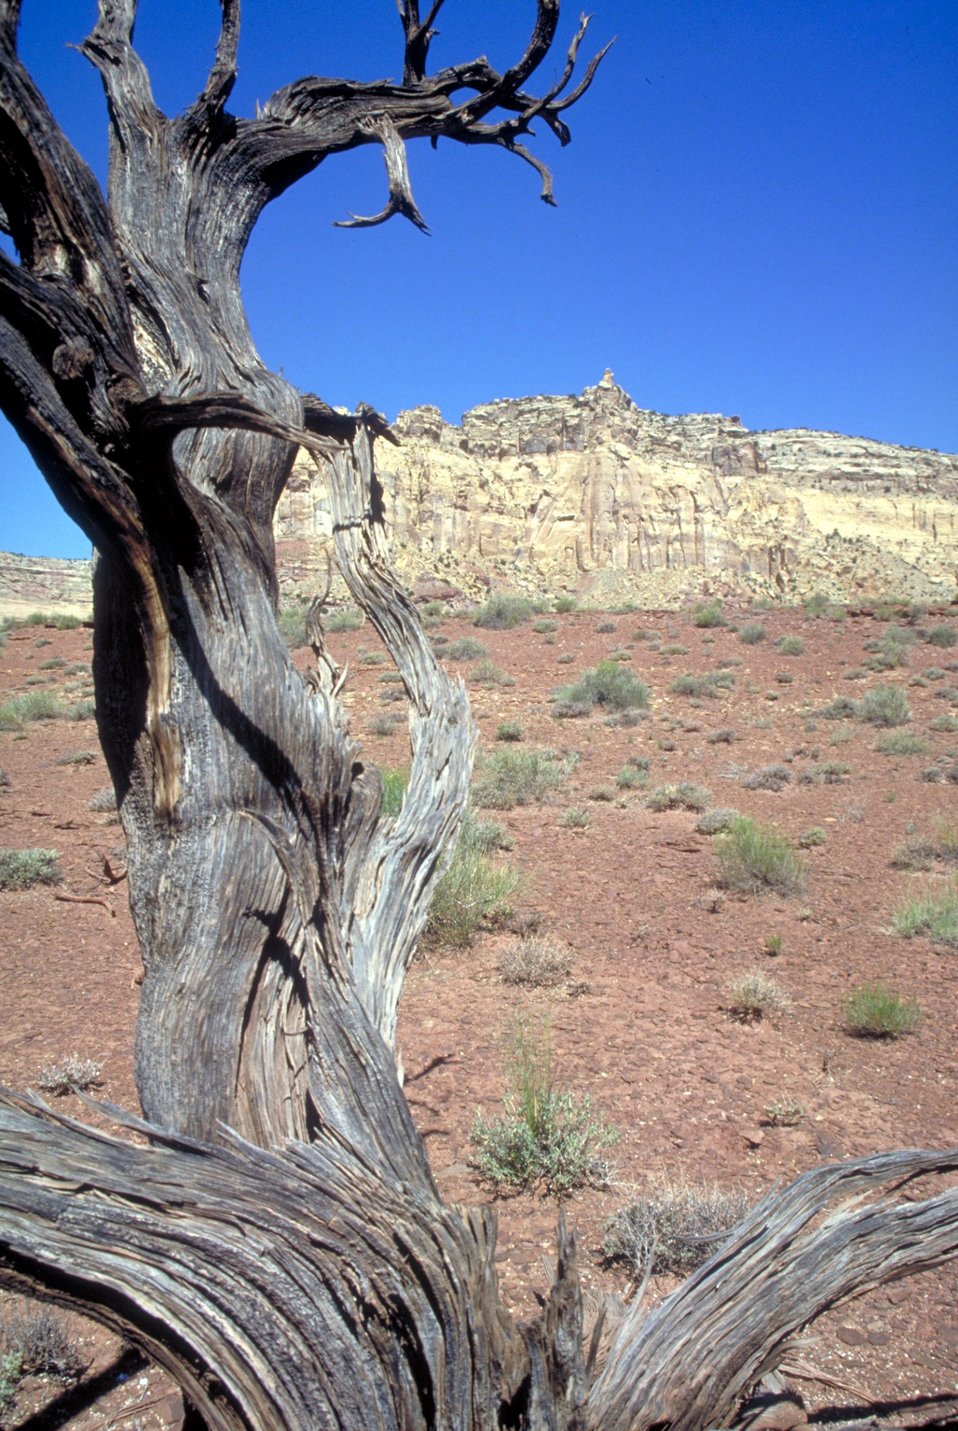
Red Canyon Loop, San Rafael Swell.